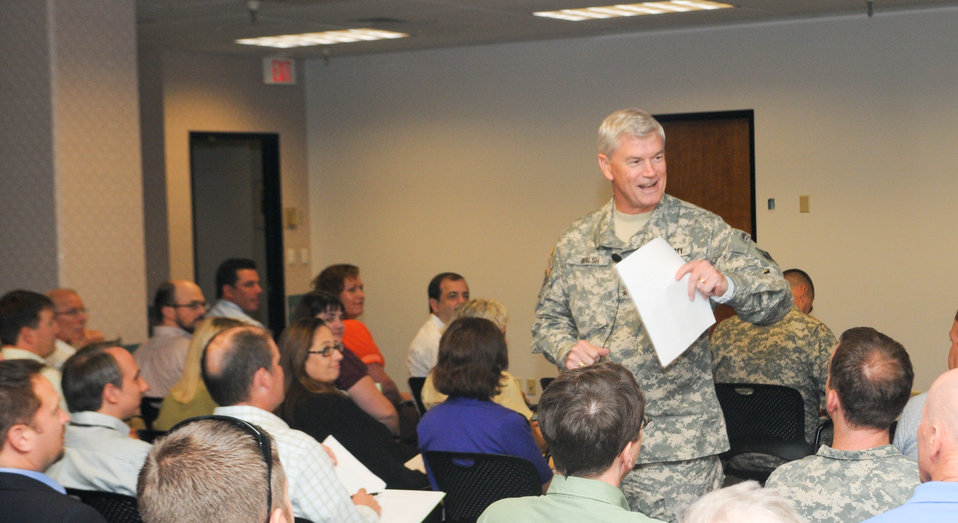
Maj. Gen. Walsh Sacramento District town hall

Maj. Gen. Michael J. Walsh, U.S. Army Corps of Engineers Deputy Commanding General for Civil and Emergency Operations, discusses how the Corps is working to build projects smarter and faster at a town hall meeting at the Corps' Sacramento District headquarters in Sacramento, Calif., July 18, 2012. Walsh oversees all of the Corps’ flood risk reduction projects in California, including Sacramento levee improvements and the construction of Folsom Dam’s new auxiliary spillway.